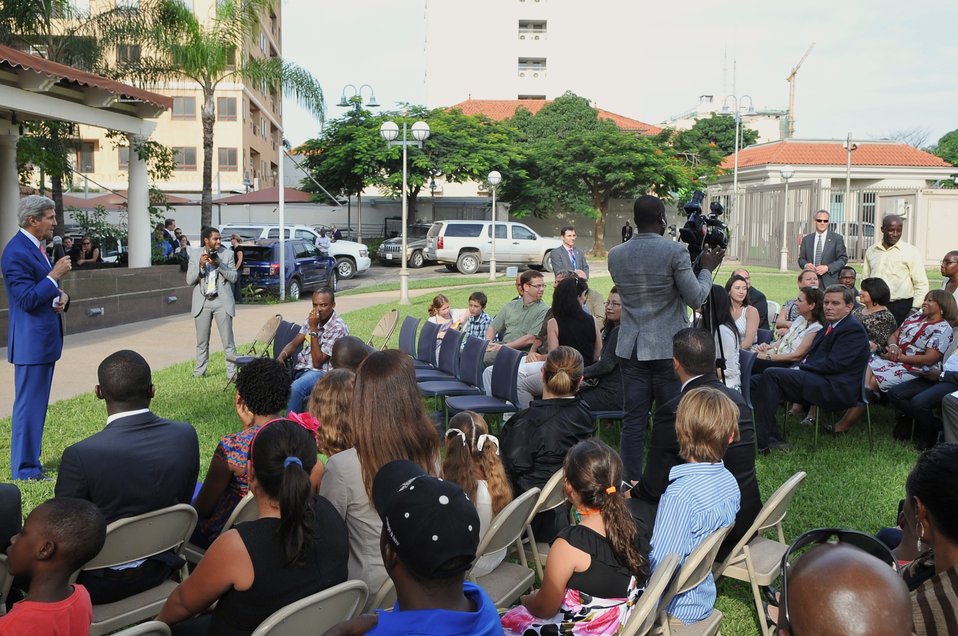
Secretary Kerry Salutes Long-Serving Local Employees at Embassy Luanda

U.S. Secretary of State John Kerry recognizes the two longest-serving local employees of Embassy Luanda as he addresses staff and family members at the site during a visit to Angola on May 4, 2014.